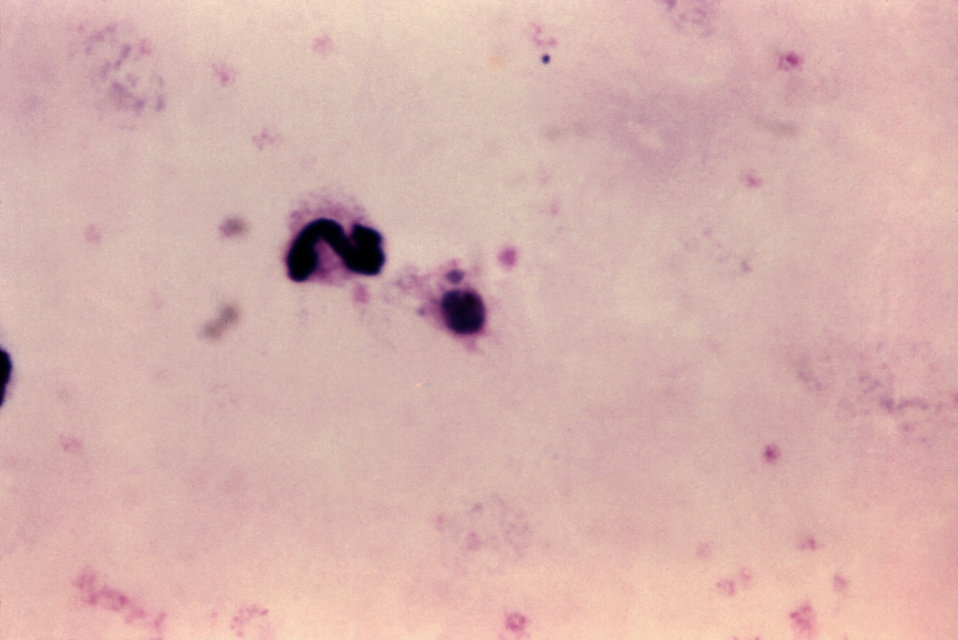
This micrograph of a thick film depicts a mature P. vivax trophozoite using Giemsa stain; Magnification 1125x.